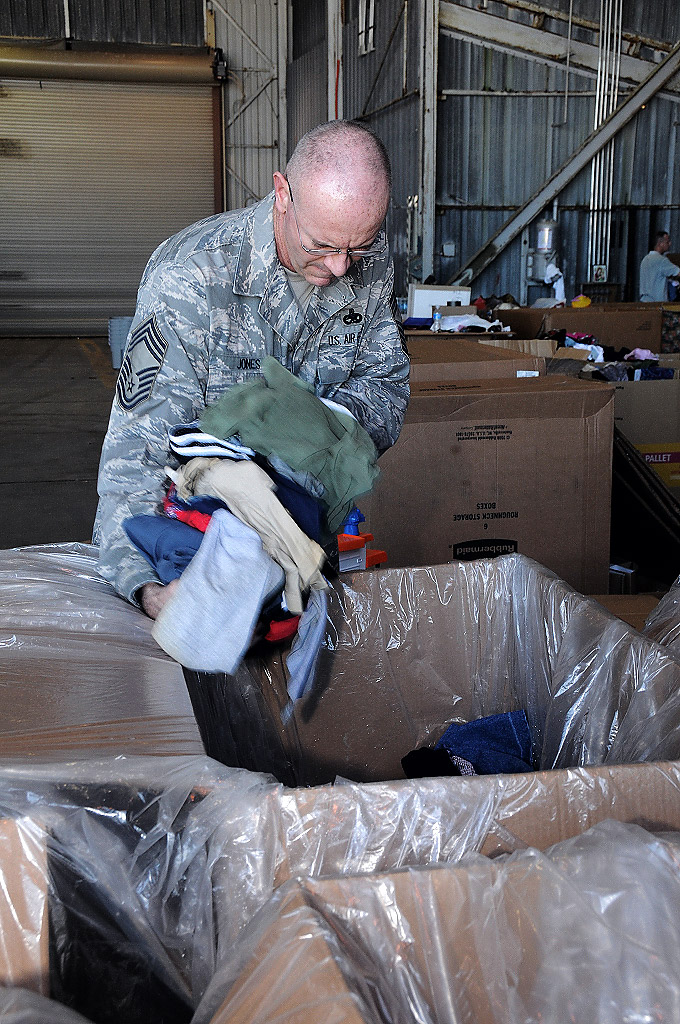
Operation Christmas Drop Holds Final Box Build

Chief Master Sgt. Steven Jones loads clothes into one of many boxes at Andersen Air Force Base, Guam, Dec. 7. The final box build was held here at Hangar 4 in preparation for airdrops to the Micronesian Islands beginning Dec. 17 through Dec. 21. Chief Jones is the 715th Air Operations Group superintendent at Hickam Air Force Base, Hawaii.